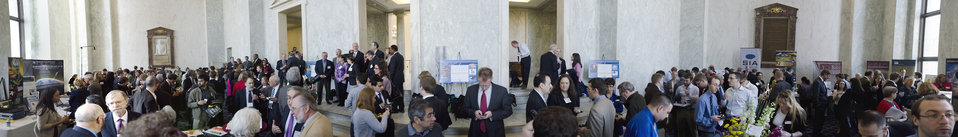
(Virtual panorama) Rayburn Foyer where USDA representatives provided information and pamphlets from the Research, Education, and Economics (REE) mission area U. S. Department of Agriculture. Agency staffers were present for Congressional Visits Day at the Rayburn House Office Building in Washington, DC, on Wednesday, April 6, 2011. The event allows U.S. representatives, staff and Capitol Hill visitors the opportunity to learn about the REE mission and the impact on America. REE's leadership responsibility is to advance scientific knowledge related to agriculture through research, extension, and education. USDA photo illustration by Lance Cheung.